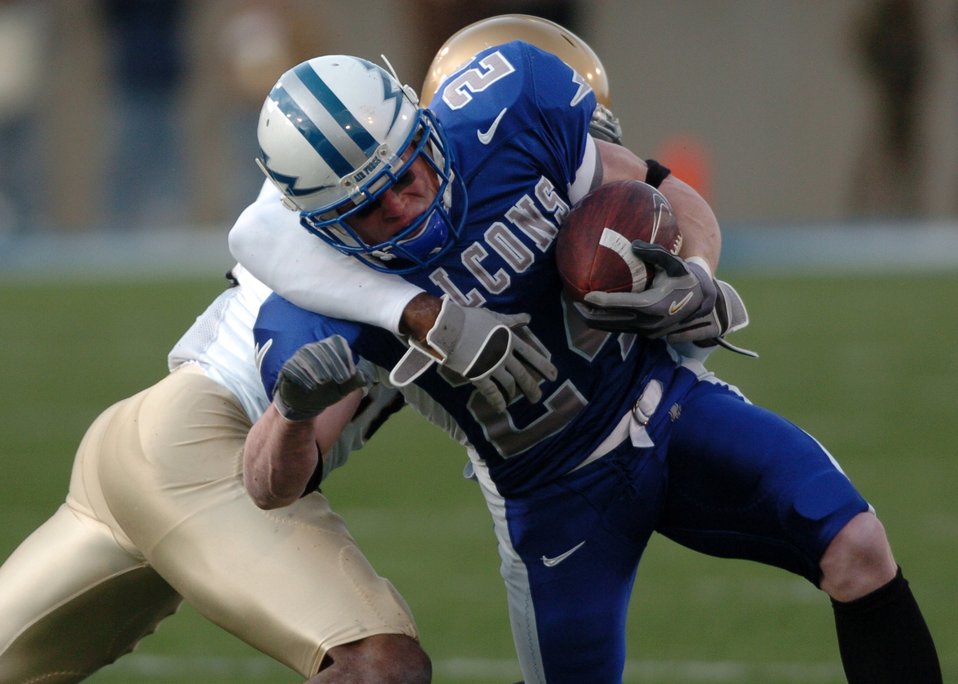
Short Gain

Air Force halfback Chad Smith is brought down by Notre Dame defensive back Chinedum Ndukwe after a pick-up of 8 yards and a first down for the Falcons. Air Force?s 200 total rushing yards were not enough to match 8th-ranked Notre Dame?s explosive offense. The Irish won, 39-17.